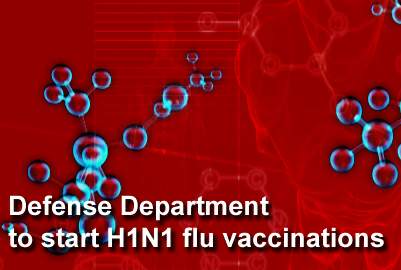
Defense Department to start H1N1 flu vaccinations

All military personnel will be vaccinated against the H1N1 flu virus, and the vaccine will be available to all military family members who want it, a Defense Department health affairs official said Sept. 2 here.